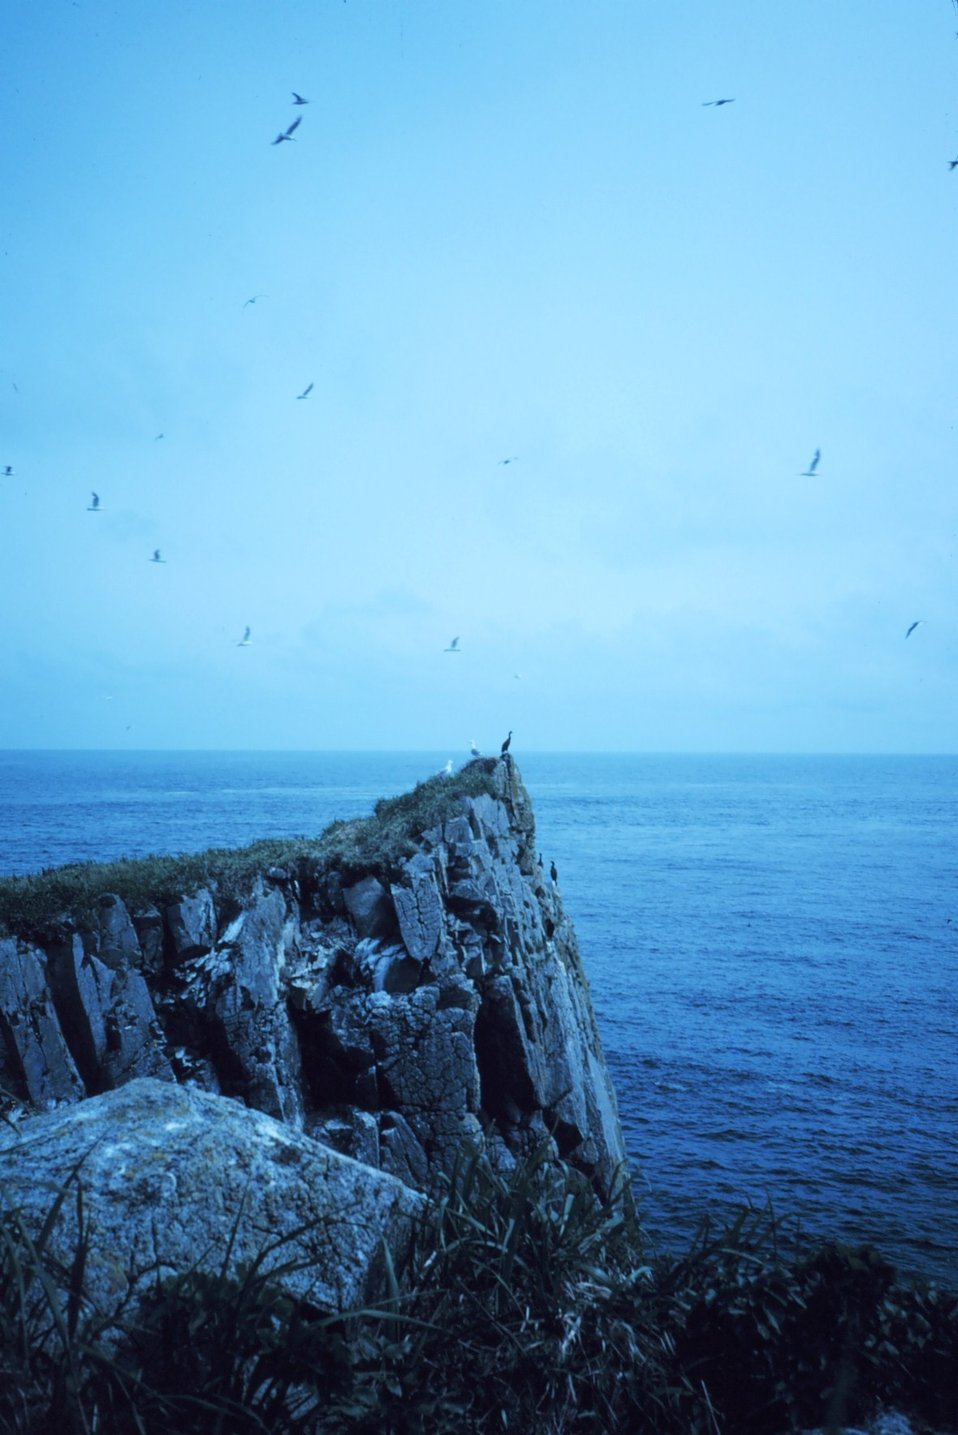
Promontory on Sutwik Island in Shelikof Strait.